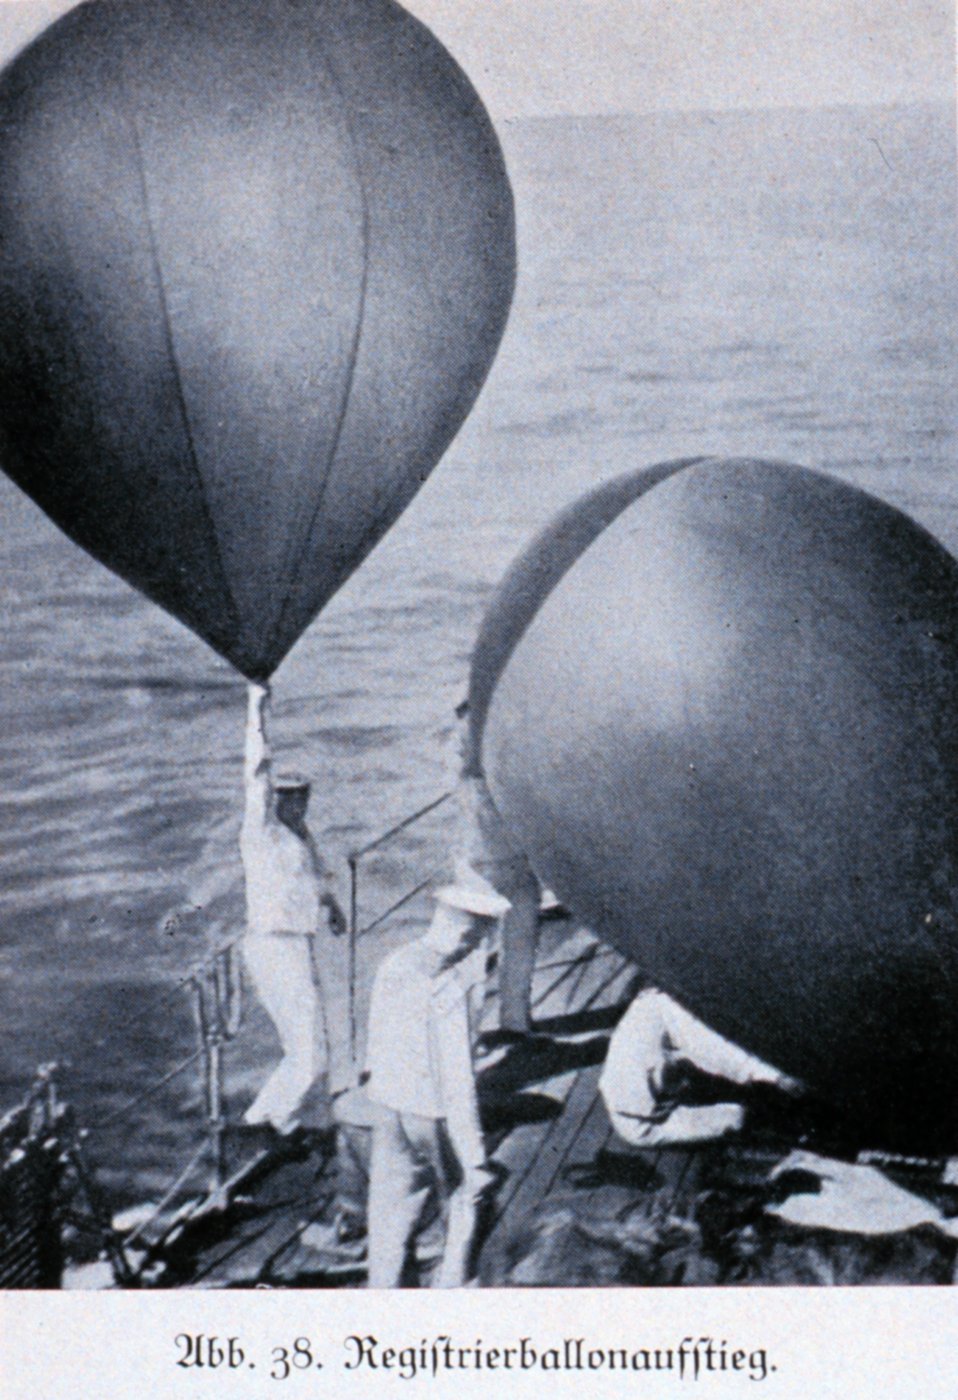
In: 'The Meteor Expedition,' by F. Spiess, German Atlantic Expedition 1925-1927. Launching meteorological balloons on the stern of the METEOR. Plate 19. Library Call Number Q115.D45 1928.